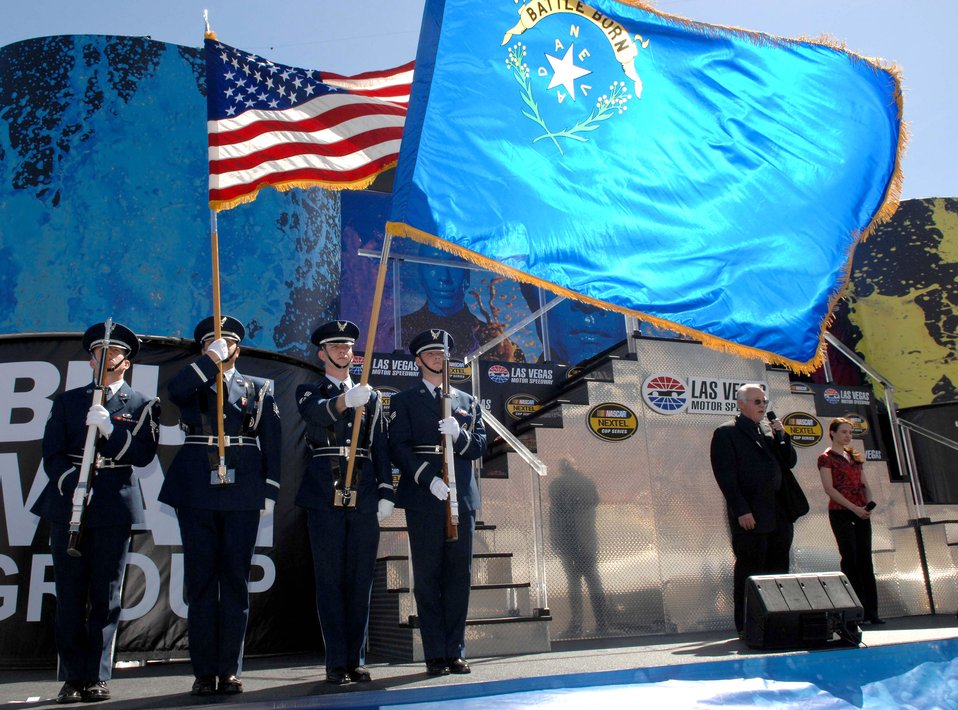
NASCAR Nextel Cup UAW Daimler-Chrysler

Air Force Honor Guard members from Nellis Air Force Base, Nev. present the colors March 11 during pre-race festivities prior to the start of the UAW Daimler-Chrysler 400 at the Las Vegas Motor Speedway.